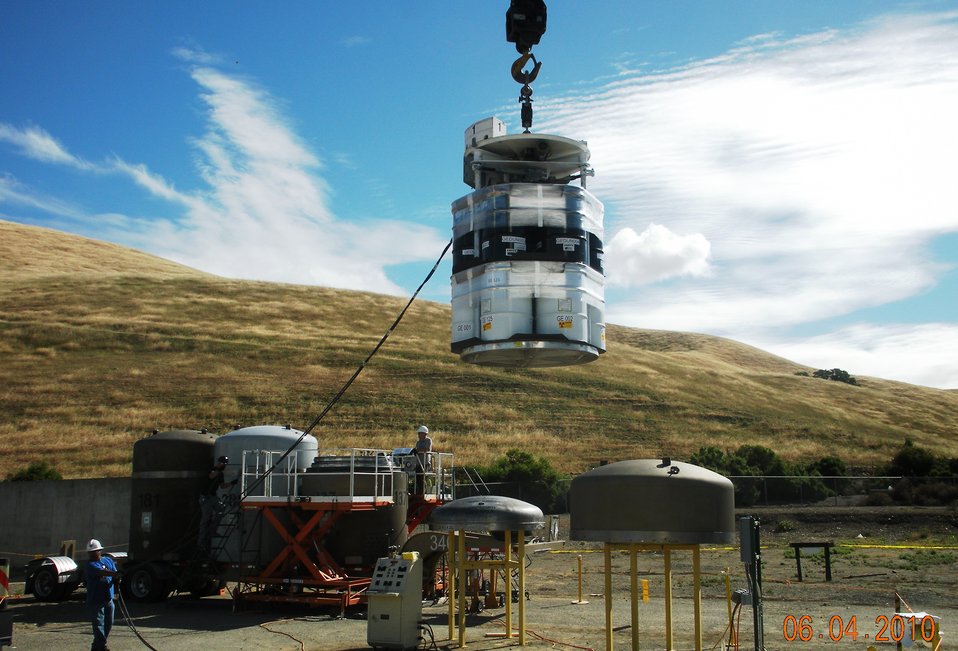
Recovery Act Leads to Cleanup of Transuranic Waste Sites

Employees load transuranic waste into a shipping container at Vallecitos Nuclear Center.